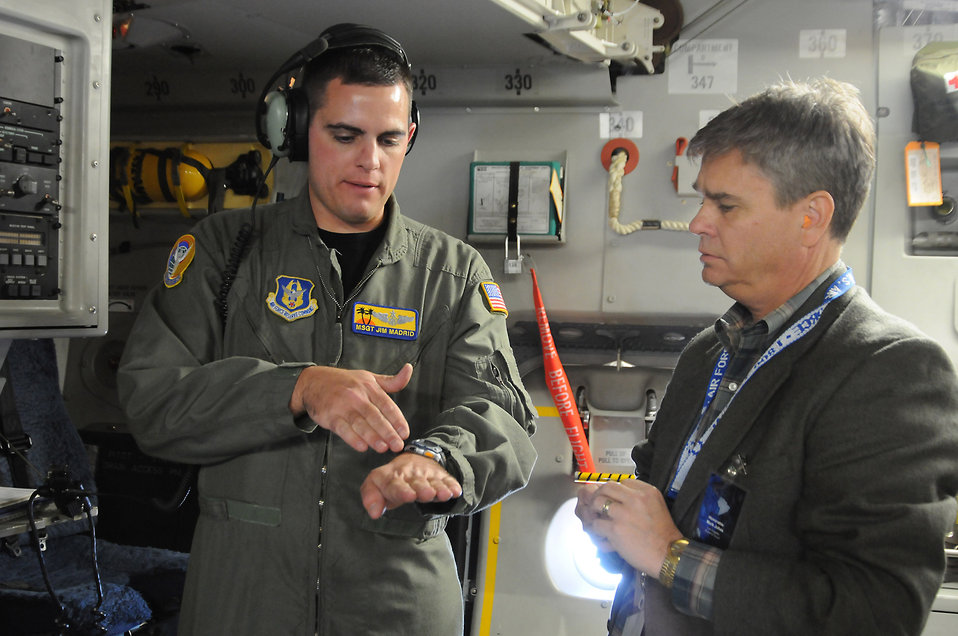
C-17 civic leader orientation flight

Master Sgt. Jim Madrid explains to Mark Juhas the refueling procedures for a C-17 Globemaster III. Mr. Juhas, a Los Angeles superior court judge, was among the civic leaders who flew on a C-17 orientation flight Nov. 10 from March Air Reserve Base, Calif. The flight was held as part of events leading up to Air Force Week-Los Angeles activities. Sergeant Madrid a loadmaster with the 729th Airlift Squadron at March ARB.